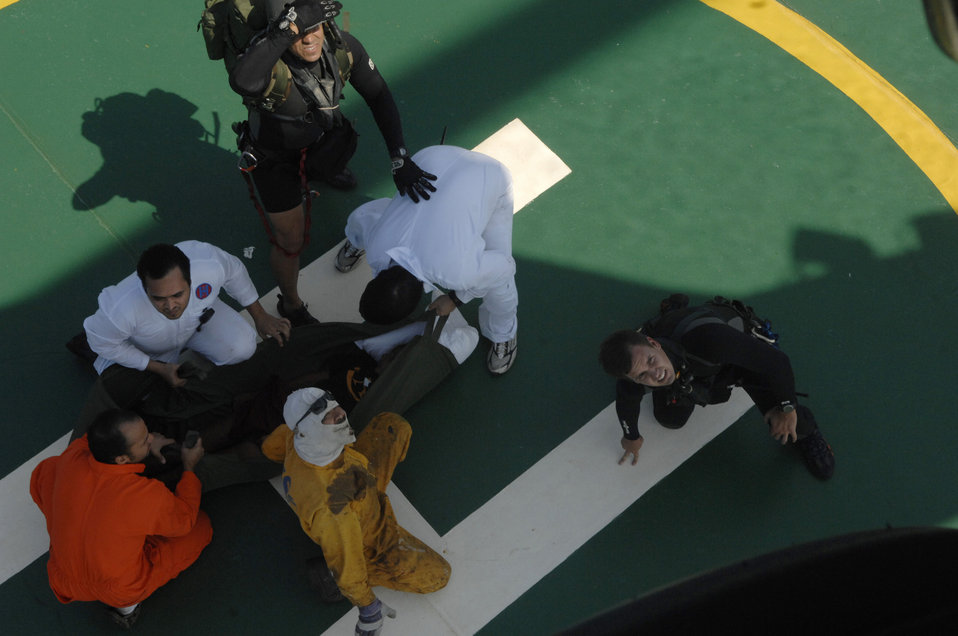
Moody Airmen rescue Cuban migrants found at sea

Pararescuemen from the 38th Rescue Squadron out of Moody Air Force Base, Ga., pick up survivors on a ship approximately 260 miles south of New Orleans during a rescue mission April 25.